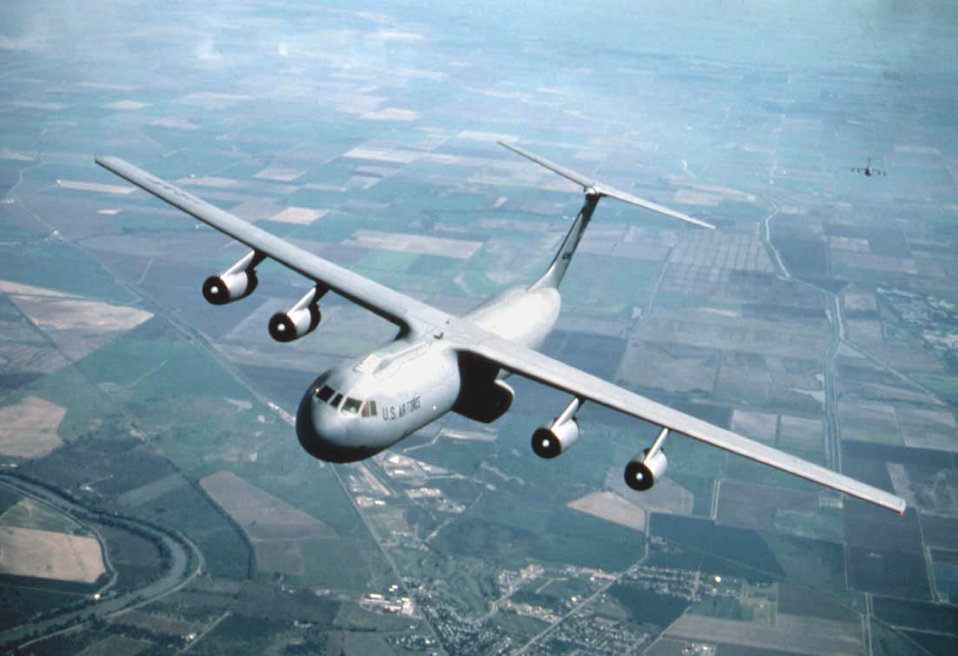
Starlifter in the sky

FILE PHOTO -- The C-141 Starlifter is the workhorse of the Air Mobility Command. The Starlifter fulfills the vast spectrum of airlift requirements through its ability to airlift combat forces over long distances, inject those forces and their equipment either by airland or airdrop, re-supply employed forces, and extract the sick and wounded from the hostile area to advanced medical facility.